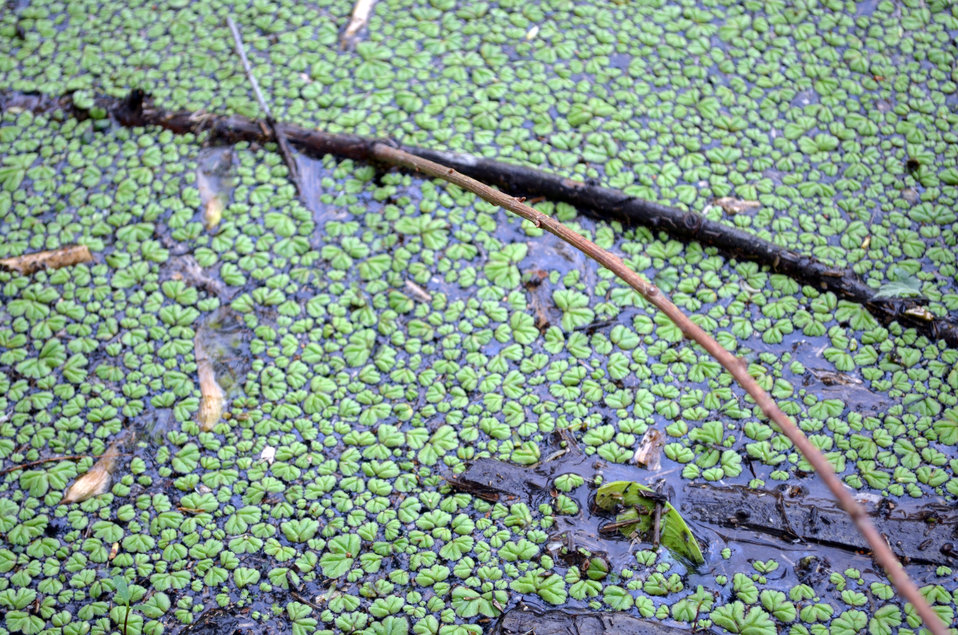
Water